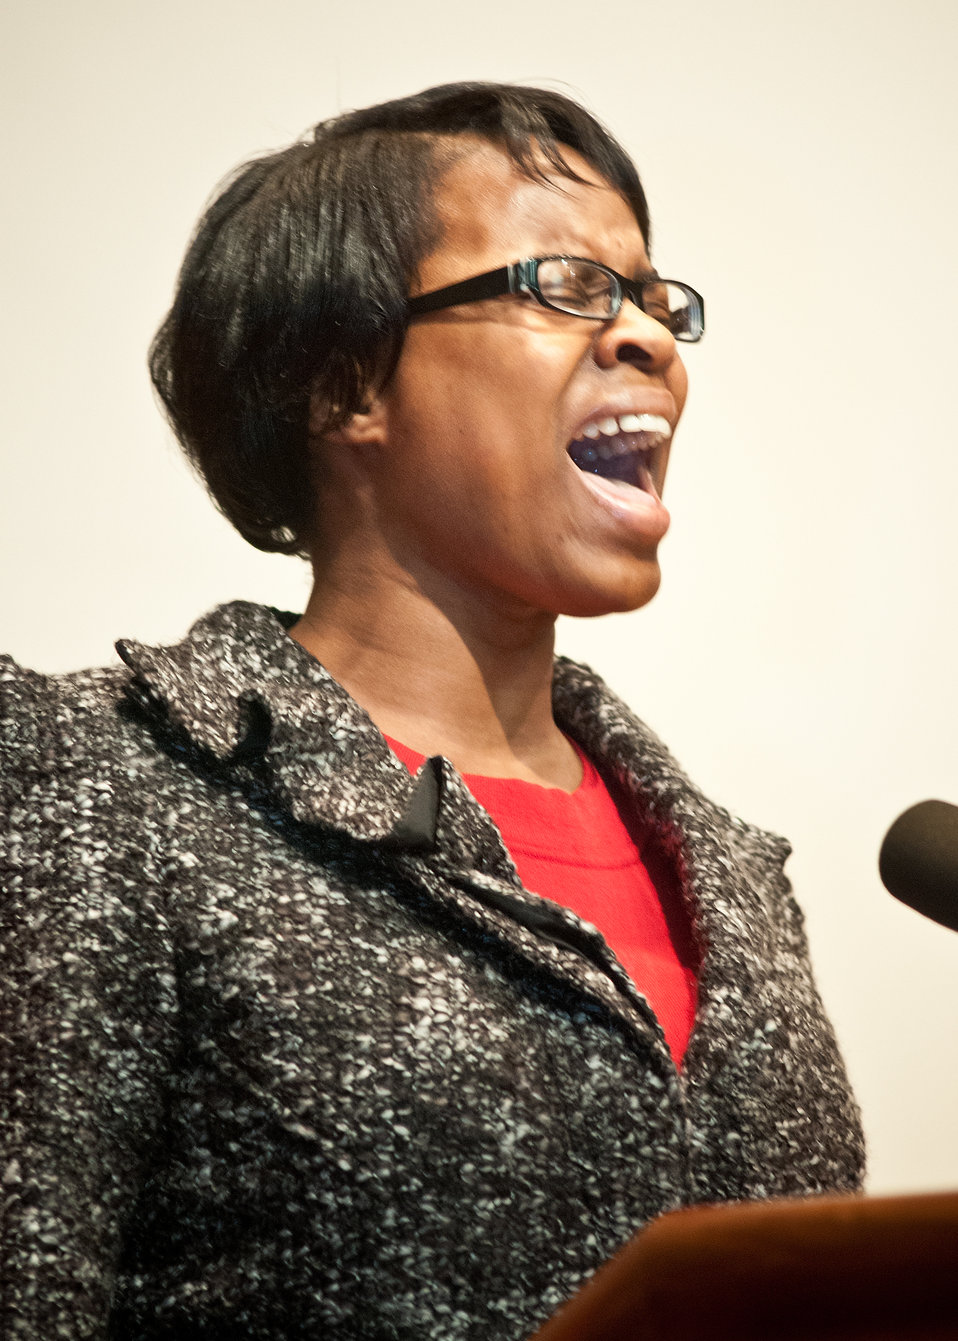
Donna Carter, Human Resources Specialist, ASCR sang a beautiful rendition of the National Anthem during the United States Department of Agriculture Black History Month celebration “Black Women in American Culture and History” in Washington, D.C. on Thursday, February 16, 2012.